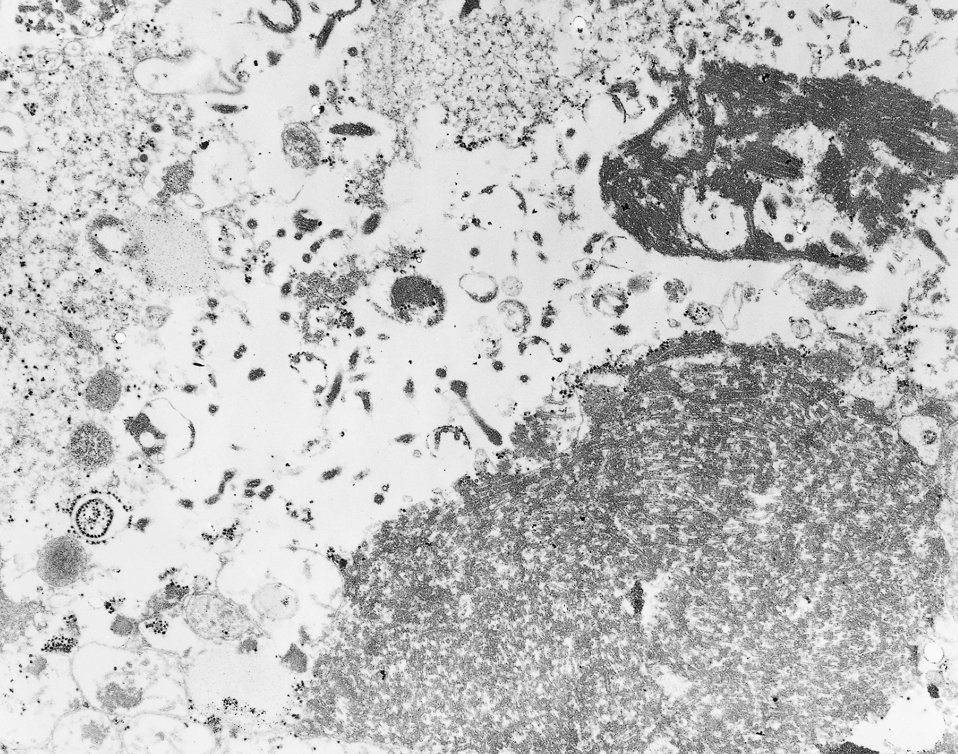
This electron micrograph shows a thin section containing the Ebola virus, the causative agent for African Hemorrhagic Fever.